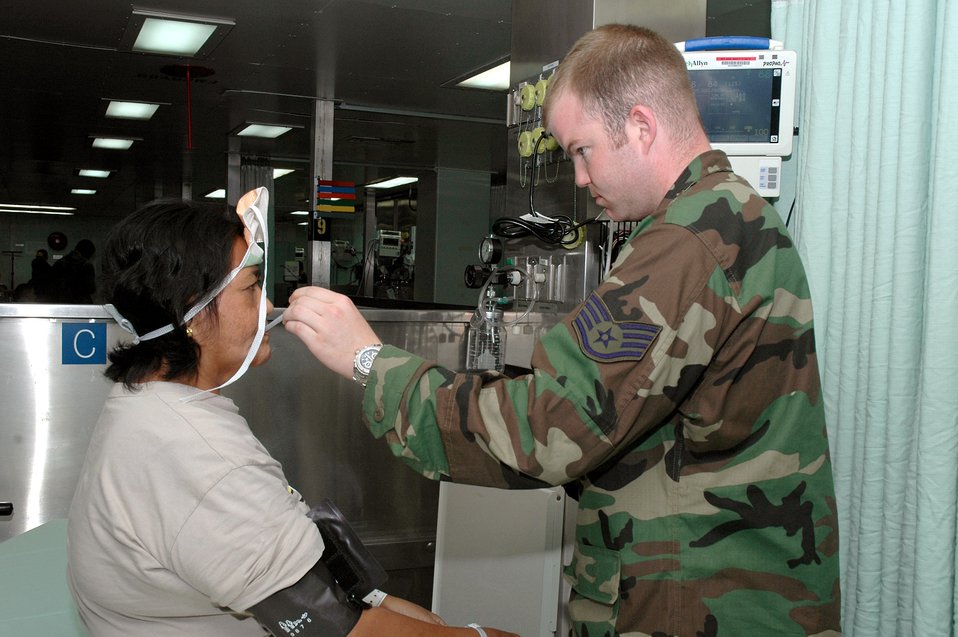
Aboard the USNS Mercy

Staff Sgt. Jeremy Clyde takes the temperature of a patient in the casualty receiving area aboard the U.S. Navy hospital ship, USNS Mercy, on Monday, May 29, 2006. The crew is conducting humanitarian and civic assistance in South and Southeast Asia and the Pacific Islands. Sergeant Clyde is one of several Air Force medical professionals on the ship.